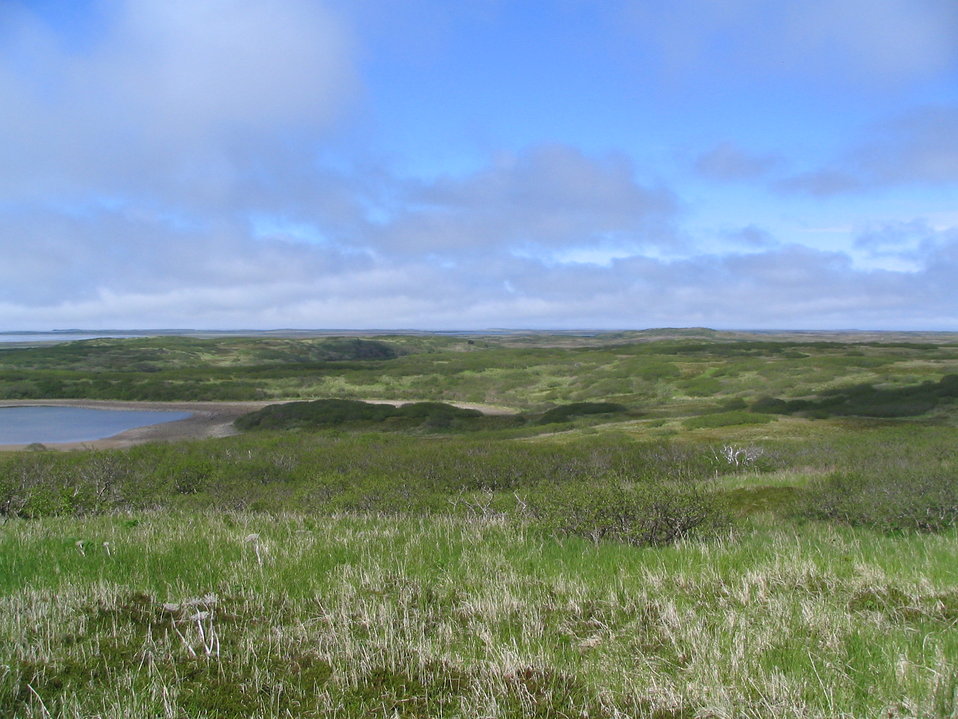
Tundra near Baldy Mountain

Izembek National Wildlife Refuge